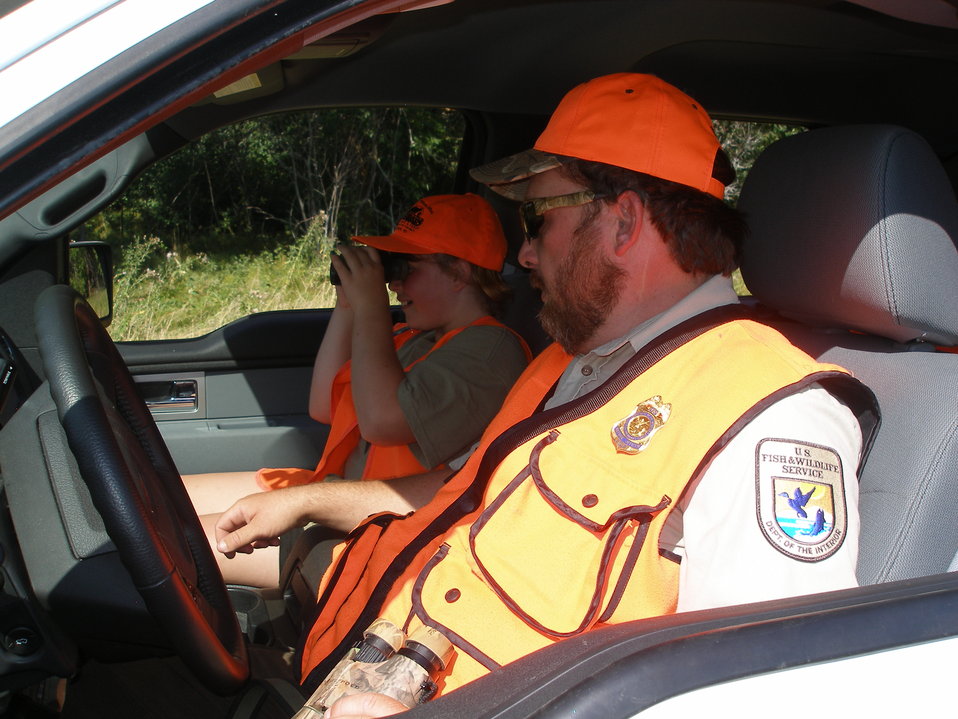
2011 Greenwing Day - Game Warden scenario session

Des Lacs National Wildlife Refuge, Tasker's Coulee

Souris River Basin Complex Law Enforcement Officer, Tighe Teets started this session to help youth learn about conservation and hunting rules and regulations.